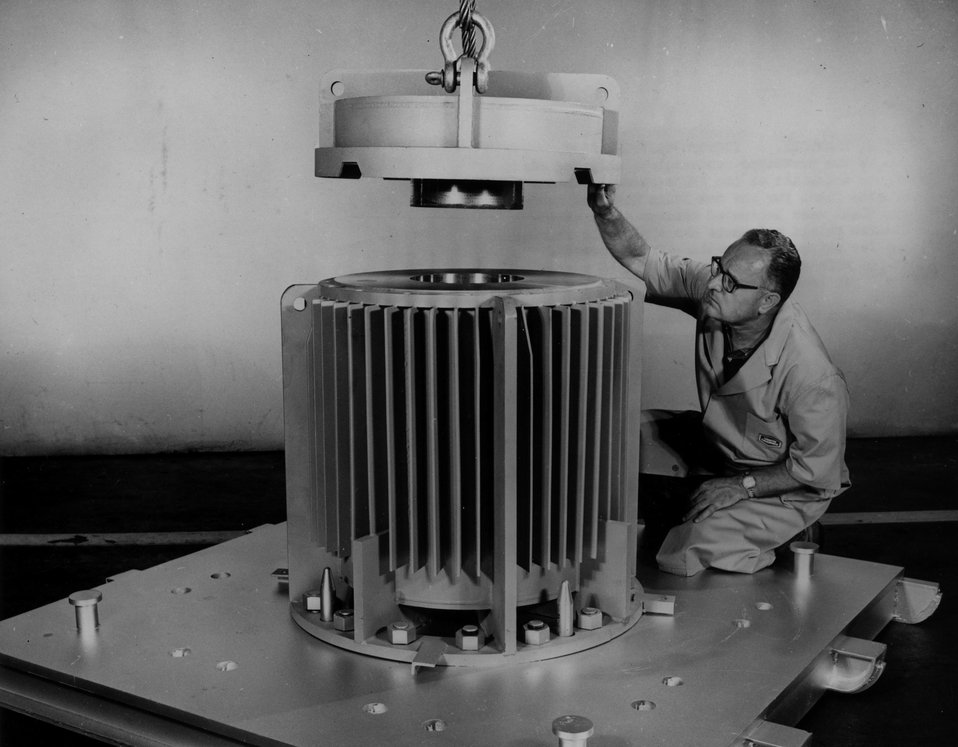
Shown is the prototype radioisotope shipping cask designed and built at the AEC's Paducah Gaseous Diffusion Plant for the Oak Ridge National Laboratory. c. 1967